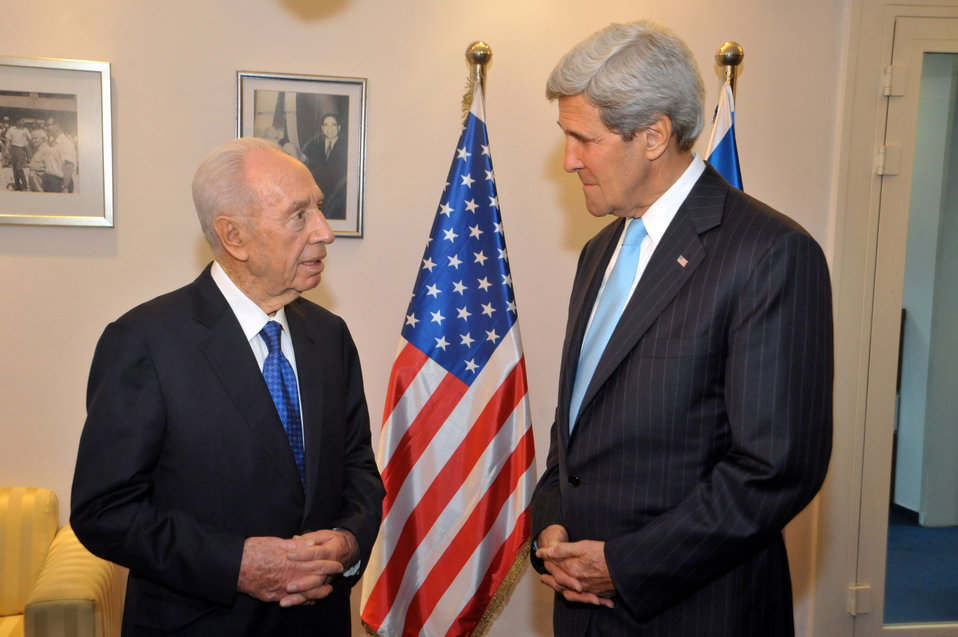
Secretary Kerry Listens to Israeli President Peres

U.S. Secretary of State John Kerry listens to Israeli President Shimon Peres before they shared a Sabbath dinner in Jerusalem on June 28, 2013.